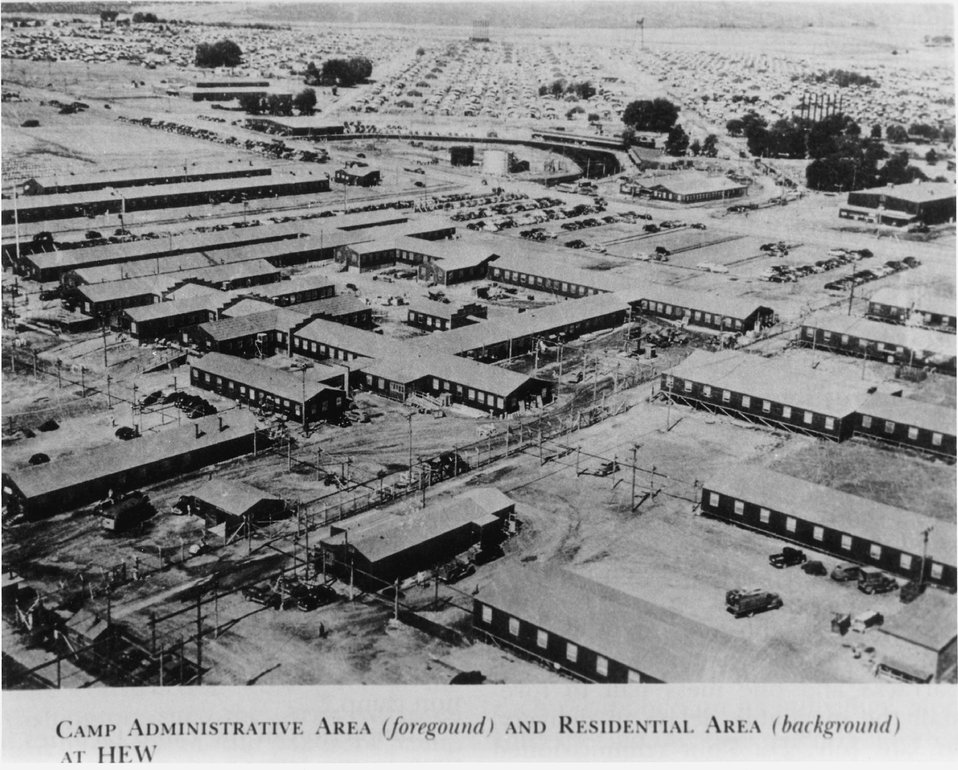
Hanford. c. undated